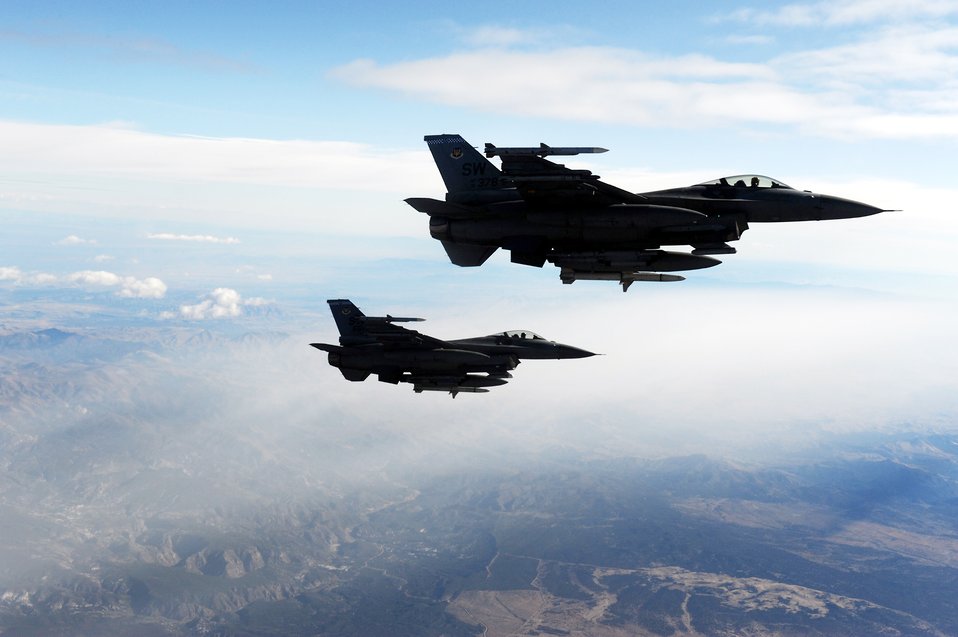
Looking for trouble

F-16 Fighting Falcons from Shaw Air Force Base, S.C. head out to the Nevada Test and Training Range, Oct. 29, 2009, during Red Flag 10-1. Red Flag is a realistic combat training exercise involving the air forces of the United States and its allies. The exercise is one of a series of advanced training programs administered by the U.S. Air Force Warfare Center.